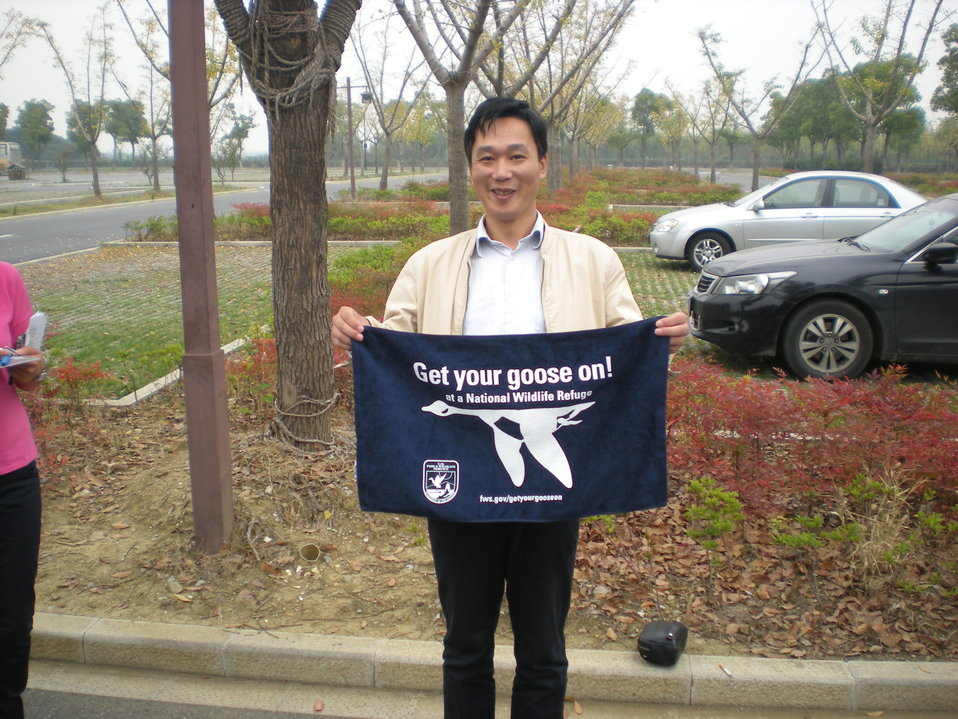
Get Your Goose On! - in China

During a 2012 visit to China, representattives from the U.S. Fish and Wildlife Service brought a number of GYGO! towels.

Pictured here is the manager of Tai Lake National Wetland Park.